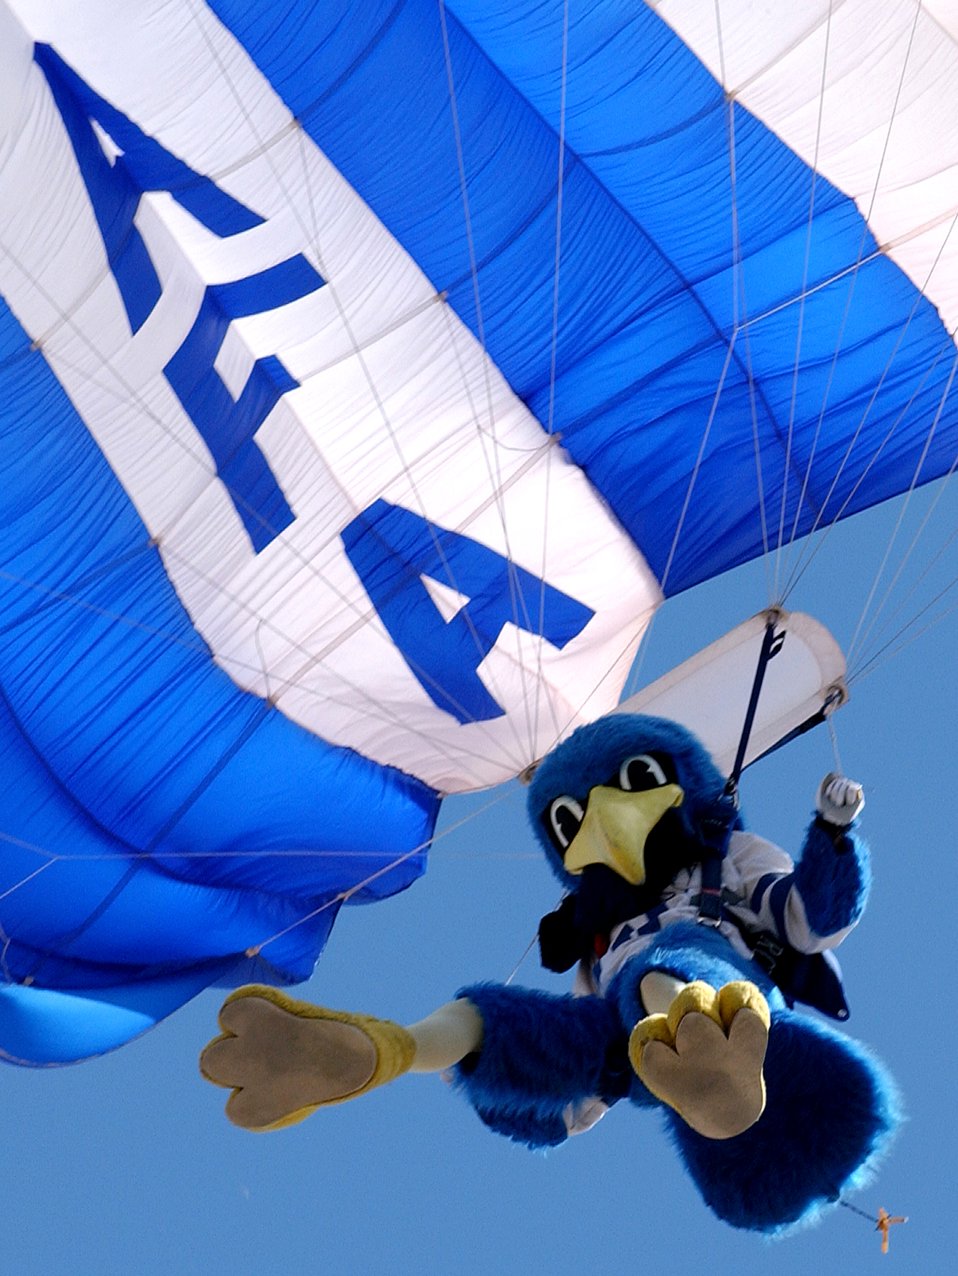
'The Bird' vies for mascot of the year

The U.S. Air Force Academy mascot,